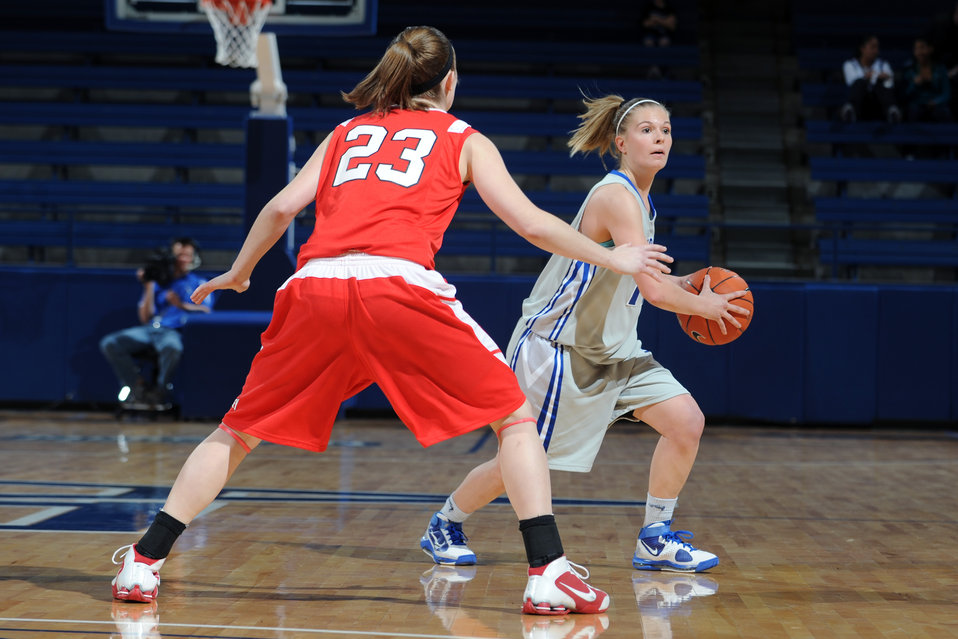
Women's basketball: Bradley University runs past Air Force

Air Force Academy sophomore guard Anna Gault looks to pass the ball up the court past Braves Lauren Niemiera during the Falcons game against Bradley University at the Academy's Clune Arena Dec. 19, 2009.